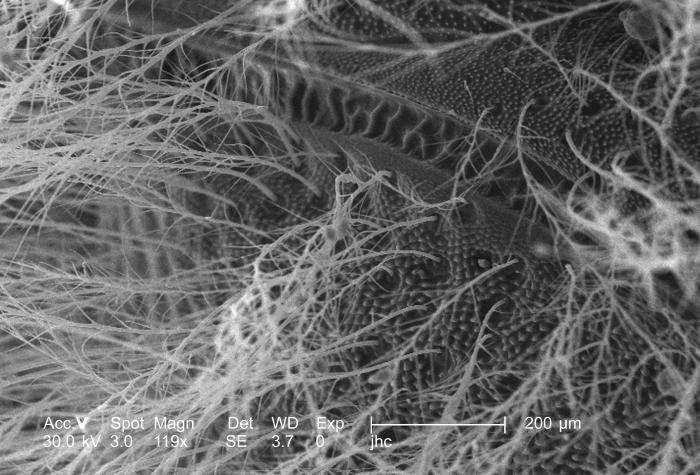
At a low magnification of 119x, this scanning electron micrograph depicted some of the morphologic details displayed on the surface of a carpenter bee's, Xylocopa virginica, head in the region of the insect's three "ocelli", or simple eyes. Note the textural complexities of bumps, ridges, troughs and "hairs" or "setae", all composed of the same proteinaceous material known as chitin, as is the exoskeleton itself.